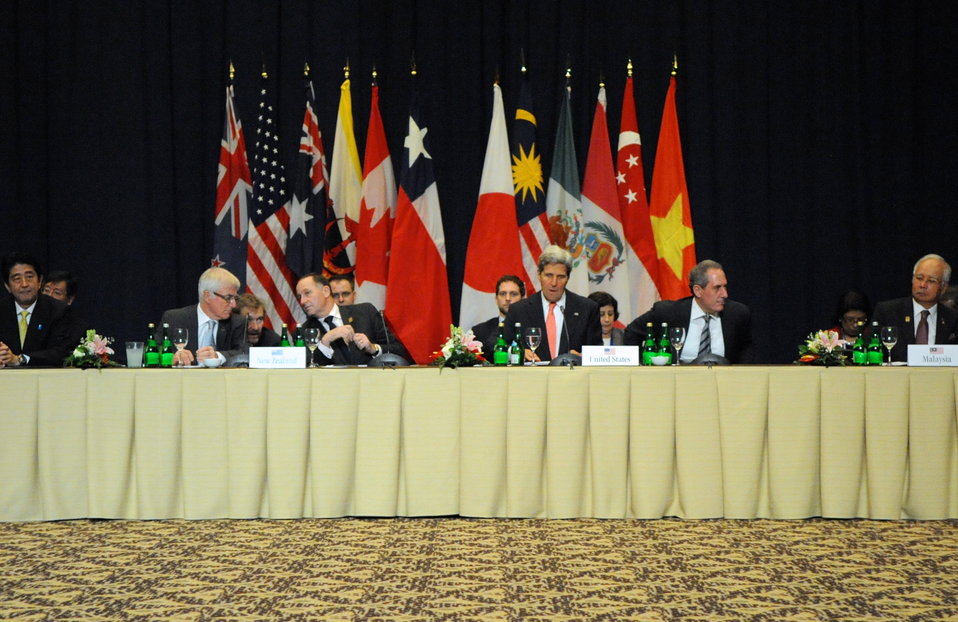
Secretary Kerry, U.S. Trade Representative Froman Prepare for the Trans-Pacific Partnership Discussion

U.S. Secretary of State John Kerry and U.S. Trade Representative Ambassador Michael Froman, right, settle in before participating in a meeting about the Trans-Pacific Partnership (TPP) held on the margins of the APEC Leader meetings in Bali, Indonesia, on October 8, 2013.